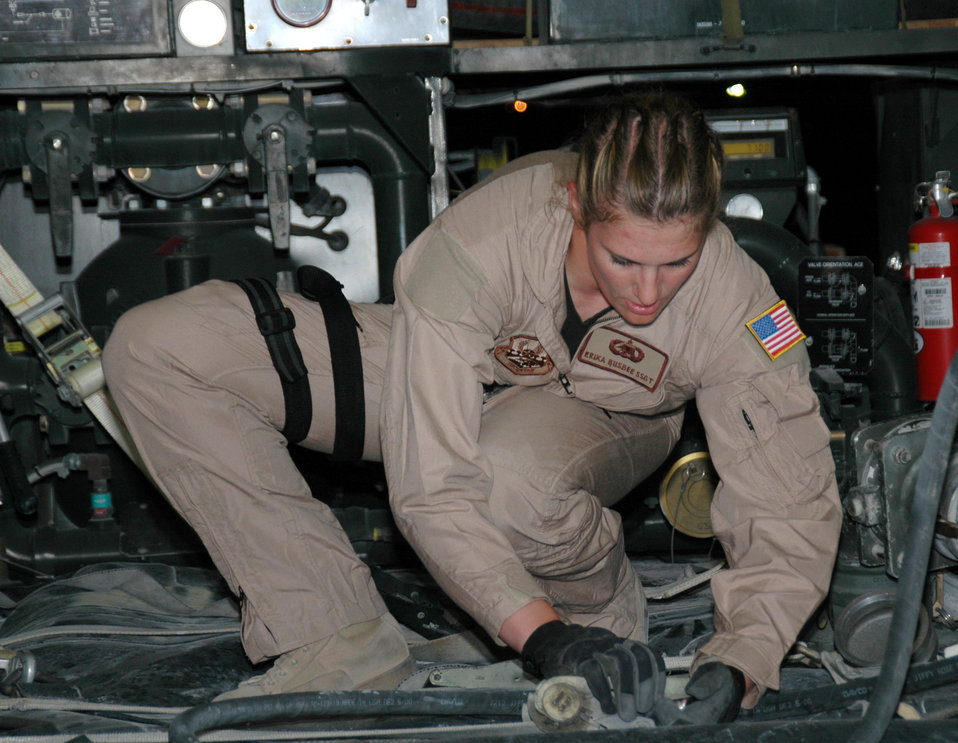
Fuel flight

SOUTHWEST ASIA (AFPN) -- Staff Sgt. Erika Busbee loosens the straps on a fuel bladder, allowing it to expand. Sergeant Busbee is a fuels technician with the 379th Fuels Management Flight. She is deployed from Nellis Air Force Base, Nev.